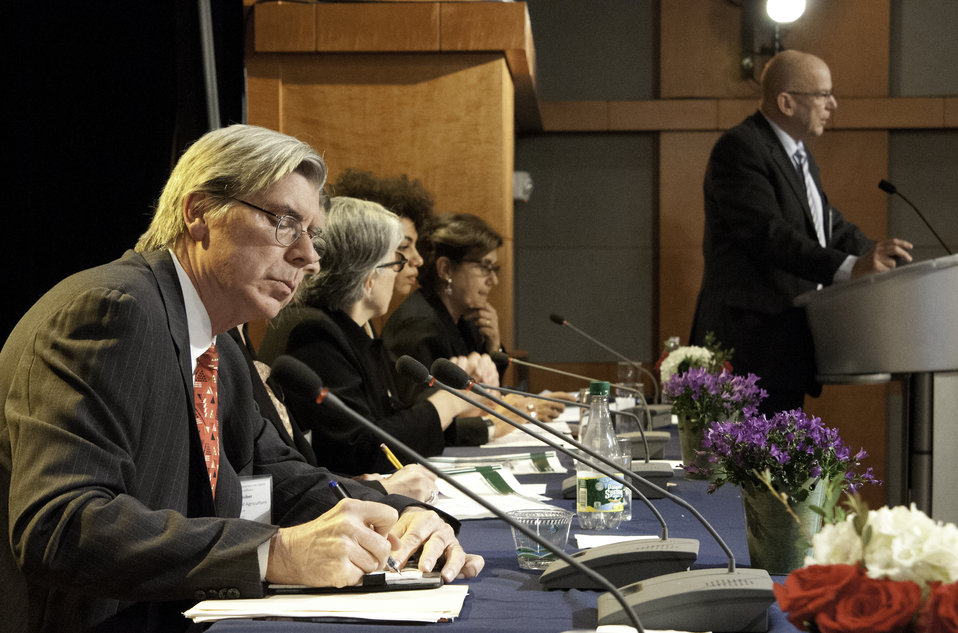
Agriculture Chief Economist Dr. Joseph Glauber takes notes at the G-8 International Conference on Open Data for Agriculture in Washington, D.C. on Apr. 29, 2013. Tropical Agriculture Platform Steering Committee interim Chair Christian Hoste spoke at the breakout session on “How Recent G-8/G-20 Research Initiatives can Contribute to the Open Data for Agriculture System”. (Seated L to R U.S. Department of Agriculture Chief Economist Dr. Joseph Glauber, Earth Observations Intergovernmental Group Secretariat Director Barbara Ryan, On behalf of NEPAD CEO Ibrahim Mayaki Sarah Lawan, and France Agriculture Chief Scientist Marion Guillou).